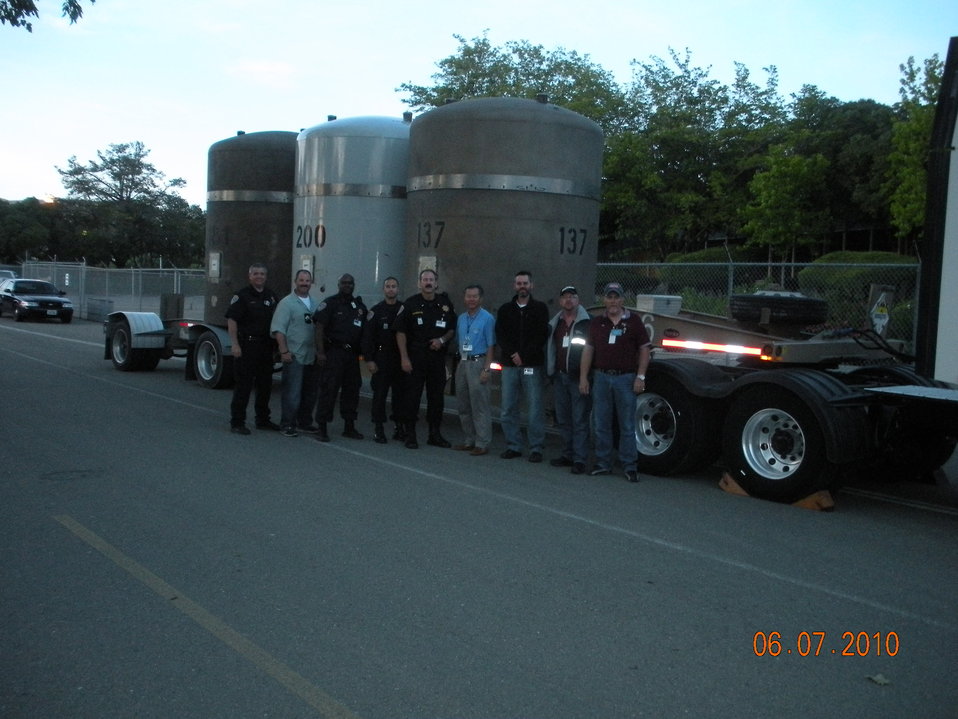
SHOWN IS THE LOADING OF CONTACT-HANDLED TRANSURANIC WASTE INTO TRUPACT-LLS AT THE GENERAL ELECTRIC VALLECITOS NUCLEAR CENTER.

This shipment is headed to Idaho for characterization shipment to Waste Isolation Pilot Plant. (WIPP)